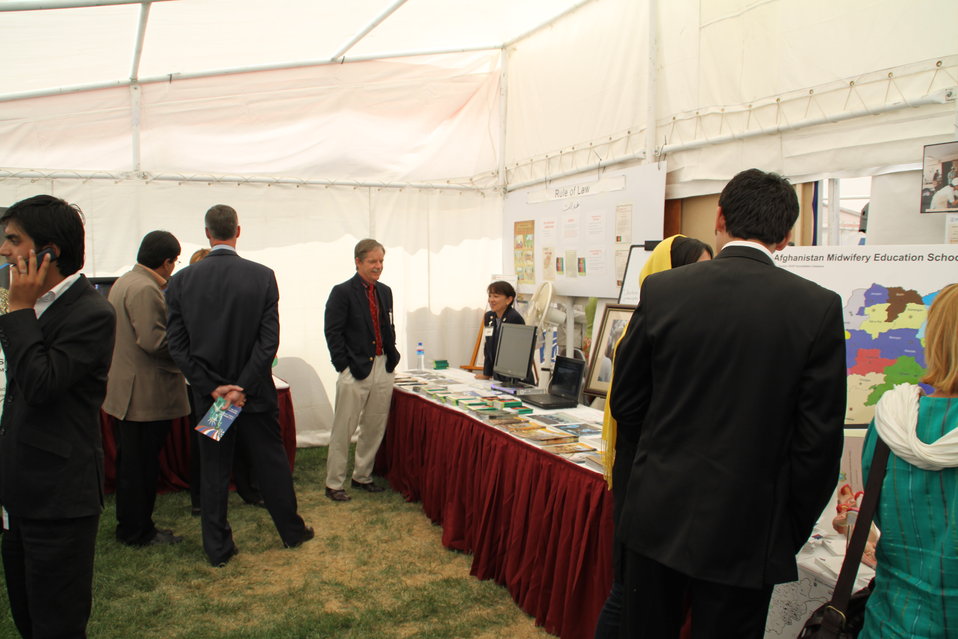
Kabul Official July 4th Celebration